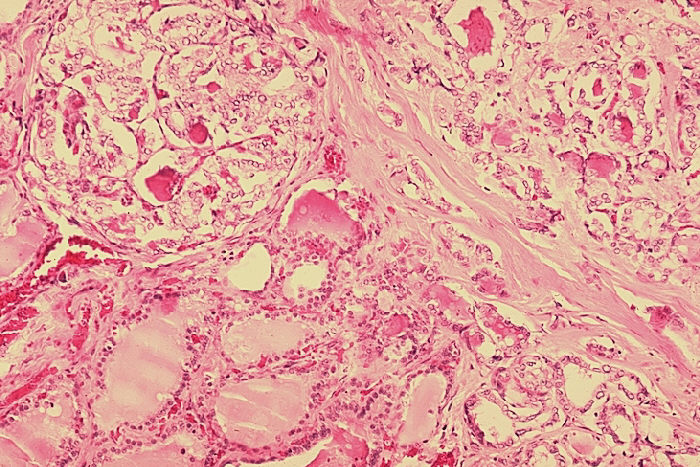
Histopathology of follicular carcinoma, thyroid.